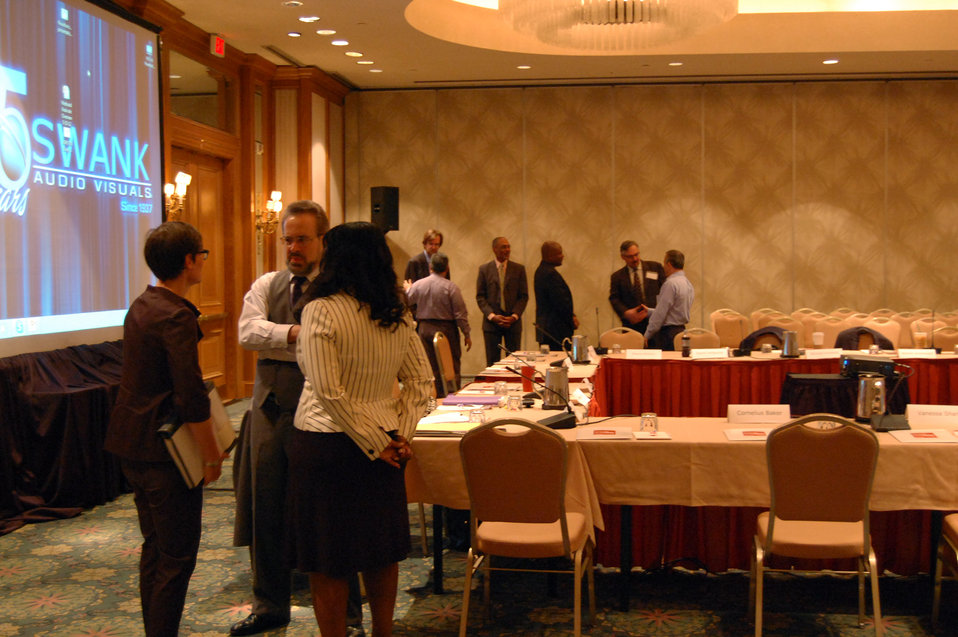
PACHA conf010